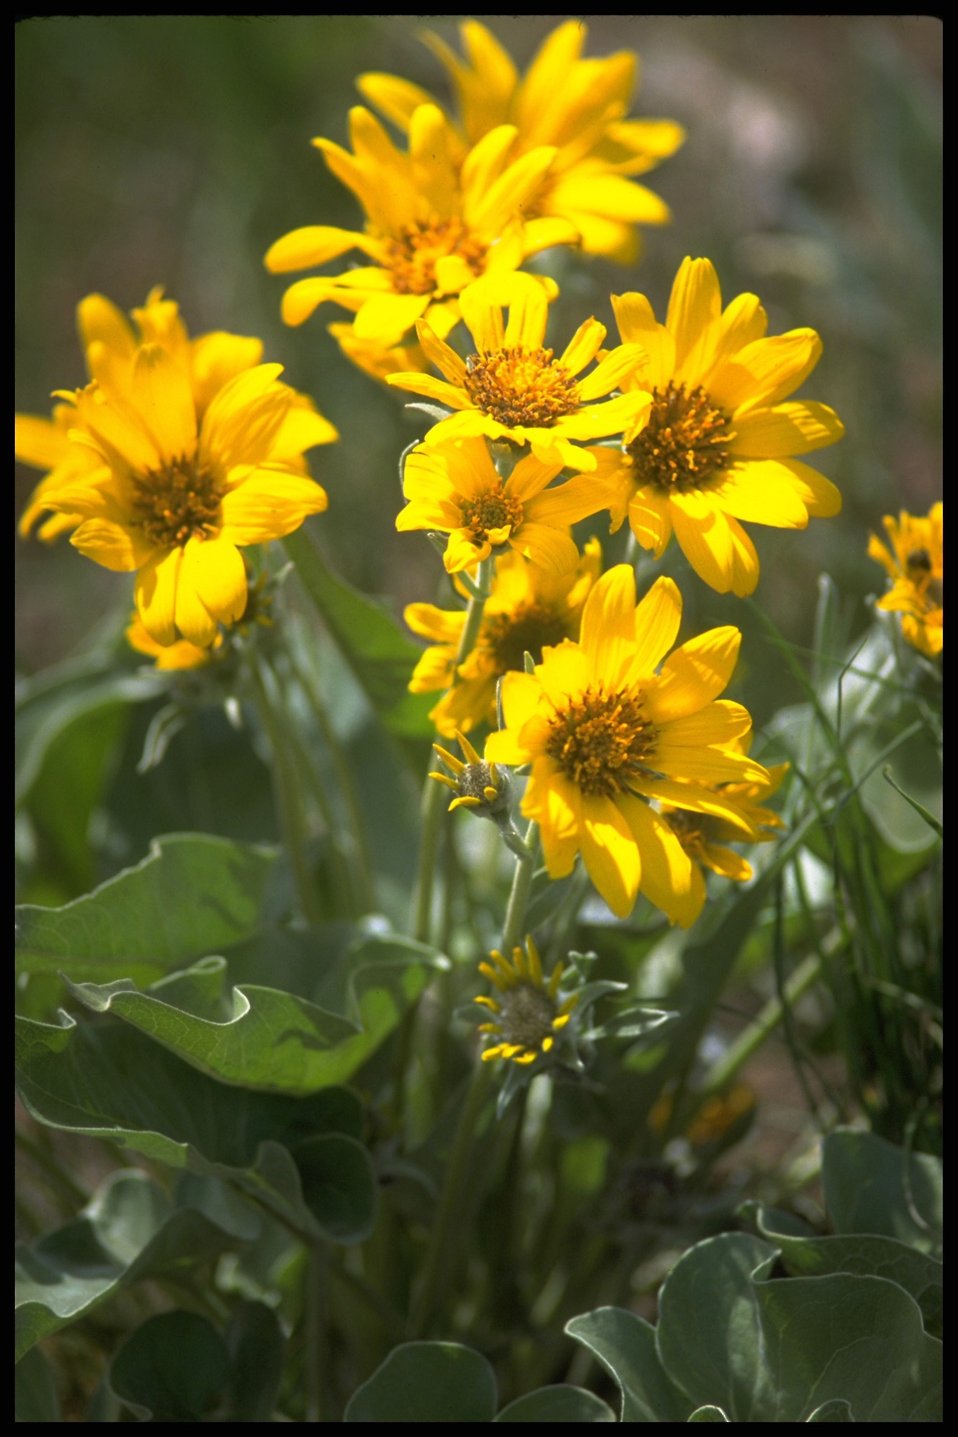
Close shot of A. Balsom wildflowers, Lakeview District.